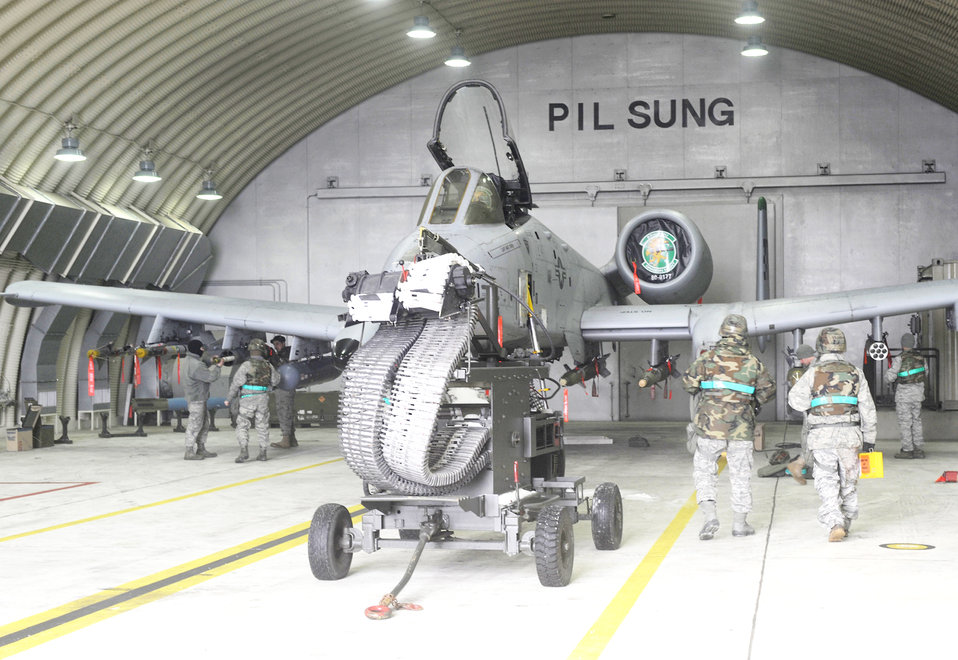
Deadly A-10

Airmen from the 51st Maintenance Squadron load munitions onto an A-10 Thunderbolt II during an exercise at Osan Air Base, South Korea, Jan. 11, 2010.